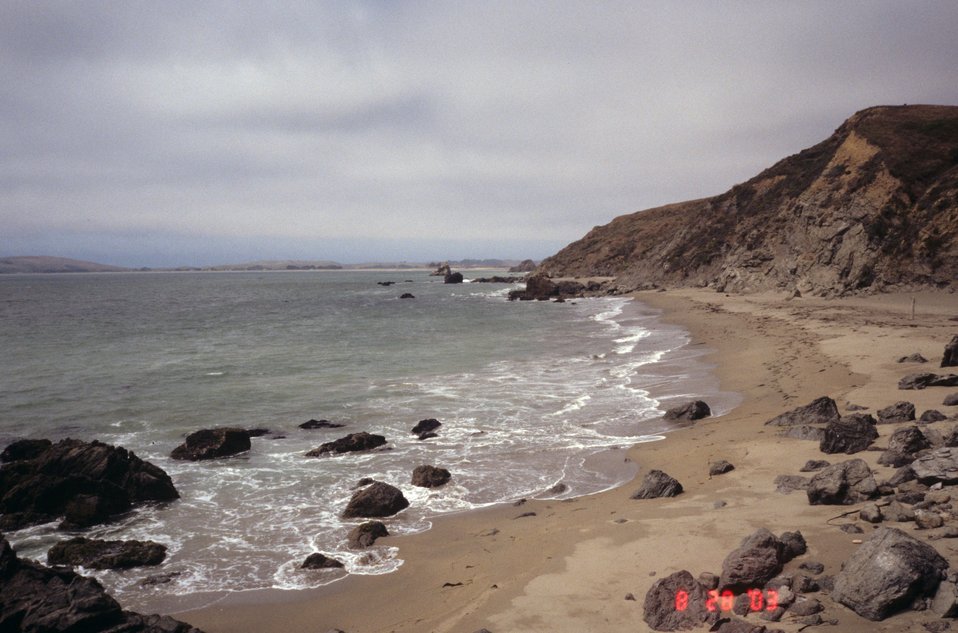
Pinnacle Gulch Beach